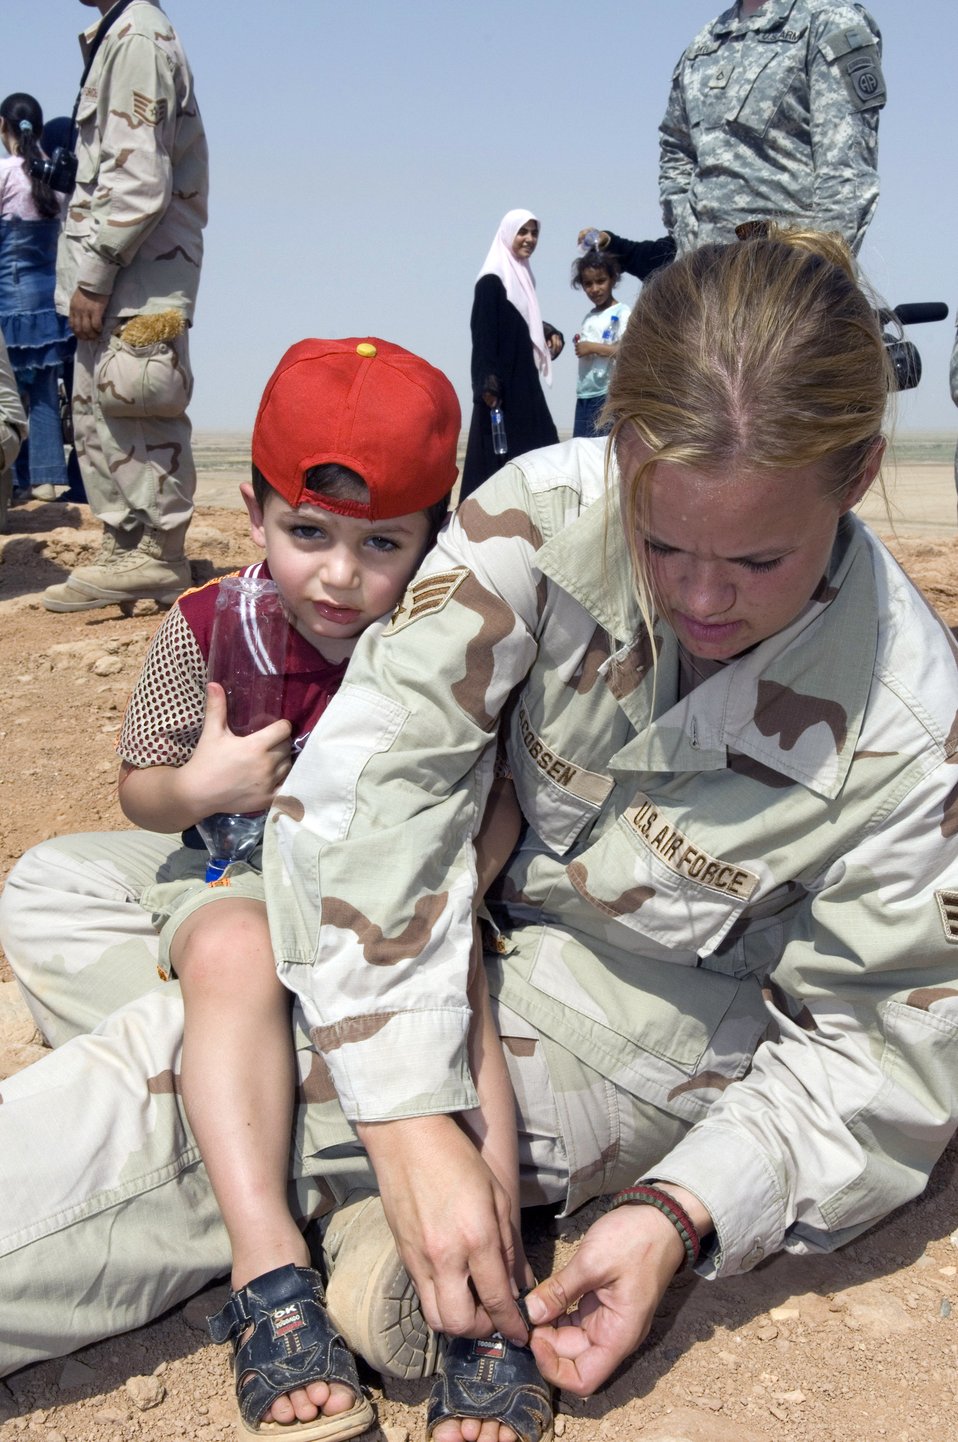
Helping hand

Senior Airman Ashley-Louise Jacobsen helps a young Iraqi boy get a rock out of his sandal during an Aug. 21 visit by 80 Iraqi nationals to the historical Ziggurat located on Ali Base, Iraq. Airman Jacobsen is a member of the 407th Expeditionary Logistics Readiness Squadron at Ali Base.